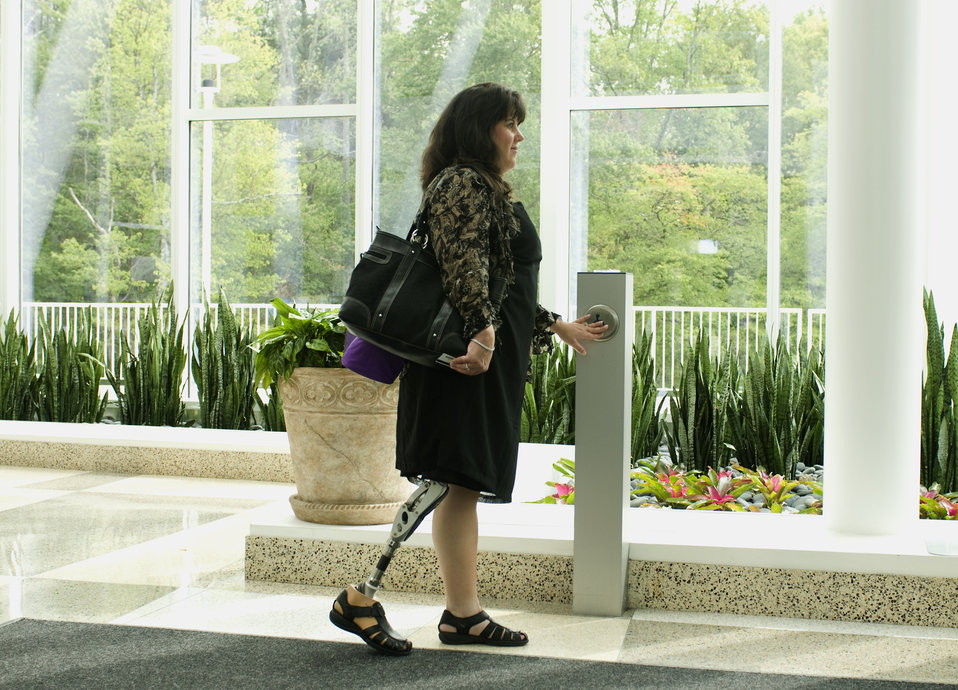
Having conducted her intended business inside a building located on one of the Centers for Disease Control and Prevention's (CDC) campuses, this woman, who was equipped with a right extremity fitted prosthesis, was about to leave the building, and had pressed the door-opening touch pad, which would open the mechanized door, thereby, allowing her to exit easily.